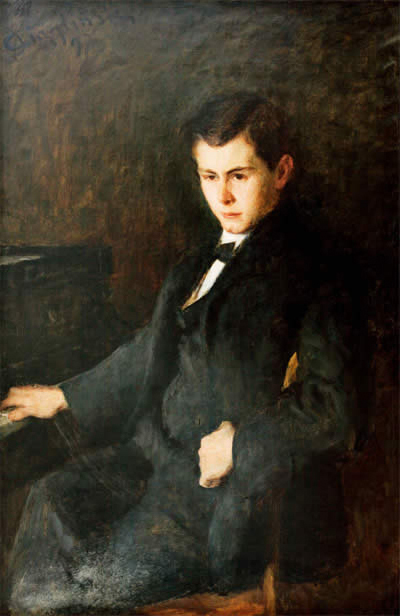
Portrait of Jozef Hofmann, Polish pianist